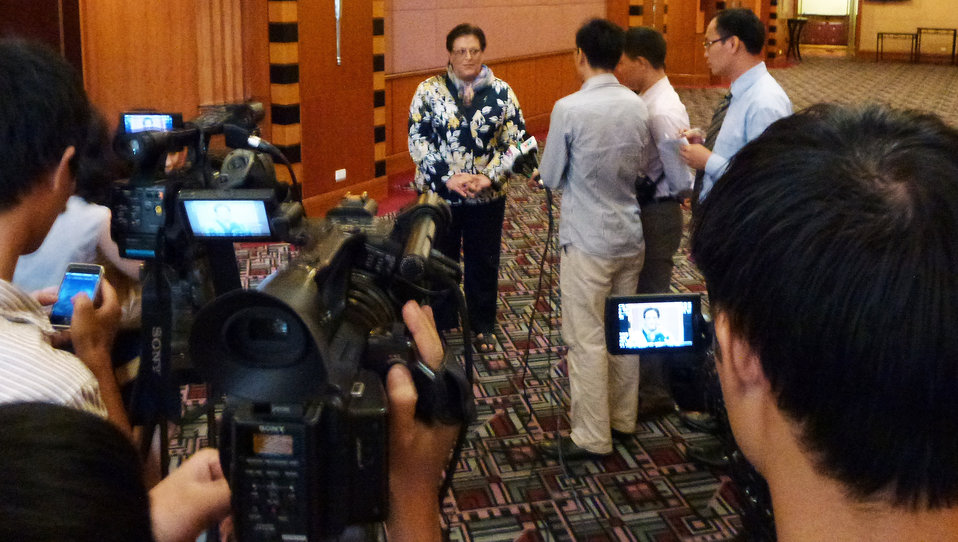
U.S. Embassy Charge d'Affaires Claire Pierangelo speaks to journalists at the USAID Support for Trade Acceleration Project (USAID STAR Plus) Closing Ceremony

Hanoi, August 26, 2013.